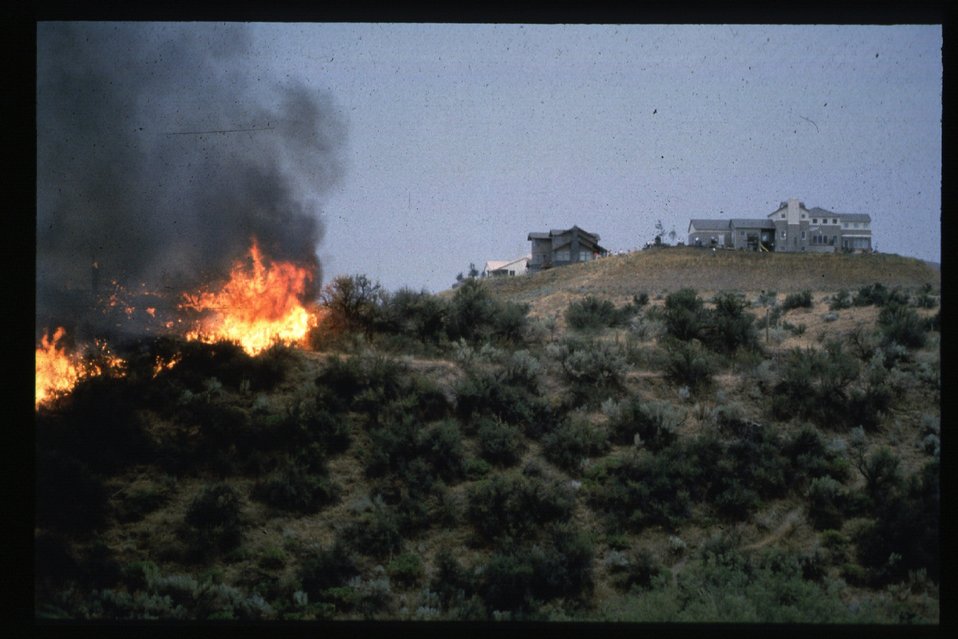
8th Street Fire Boise Front Foothills Four Rivers Field Office LSRD Lower Snake River District